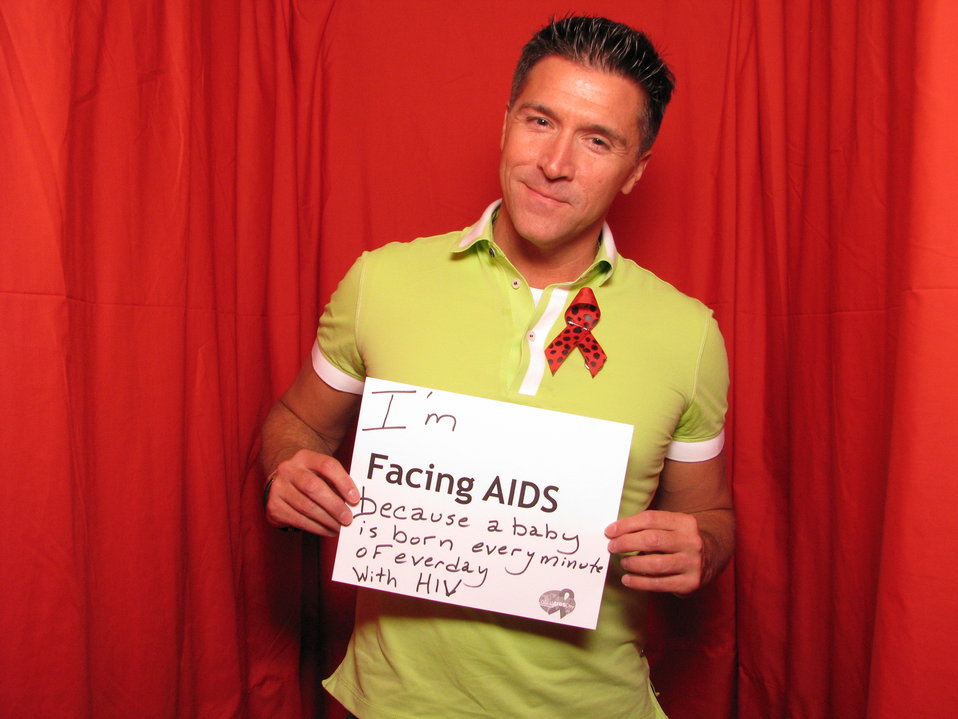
I'm FACING AIDS because a baby is born every minute of every day with HIV.

From the AIDS.gov photo booth at the U.S. Conference on AIDS, September 2010 (Orlando, FL).